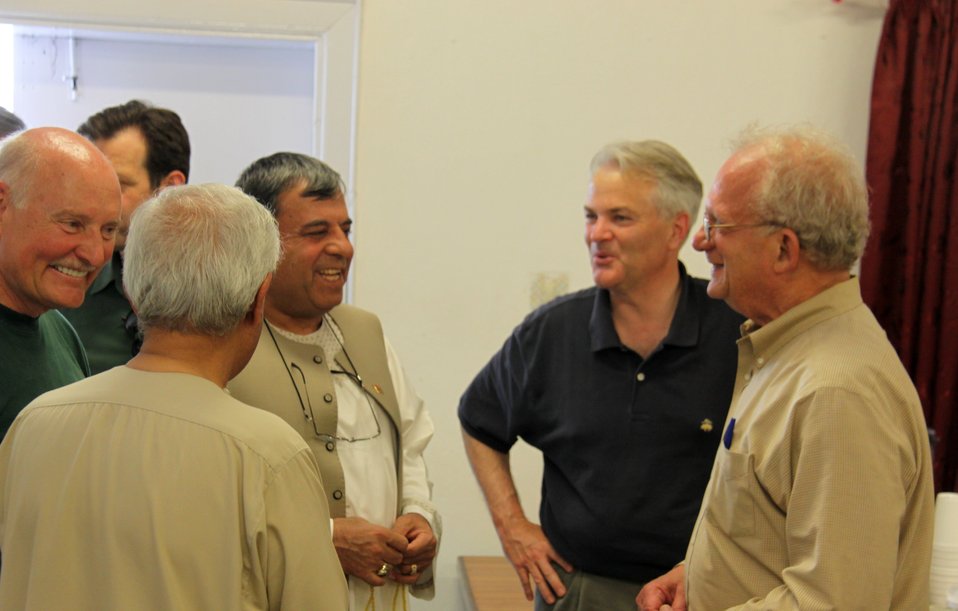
Meeting with Local Leaders in Kandahar